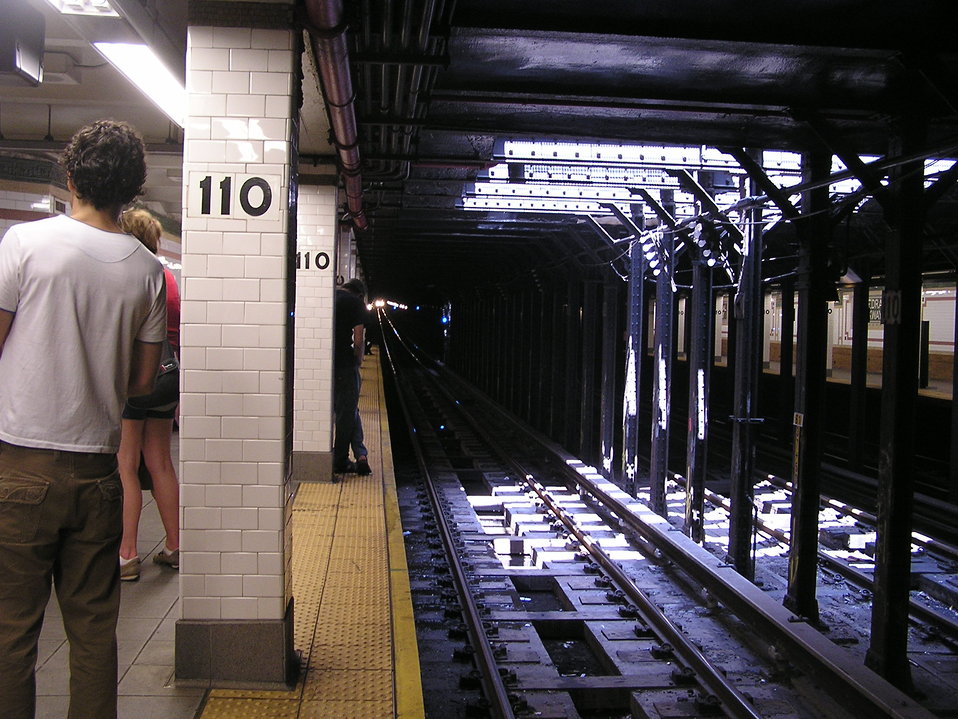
The 110th Street Station at 110th and Broadway in Morningside Heights, Manhattan, New York City.